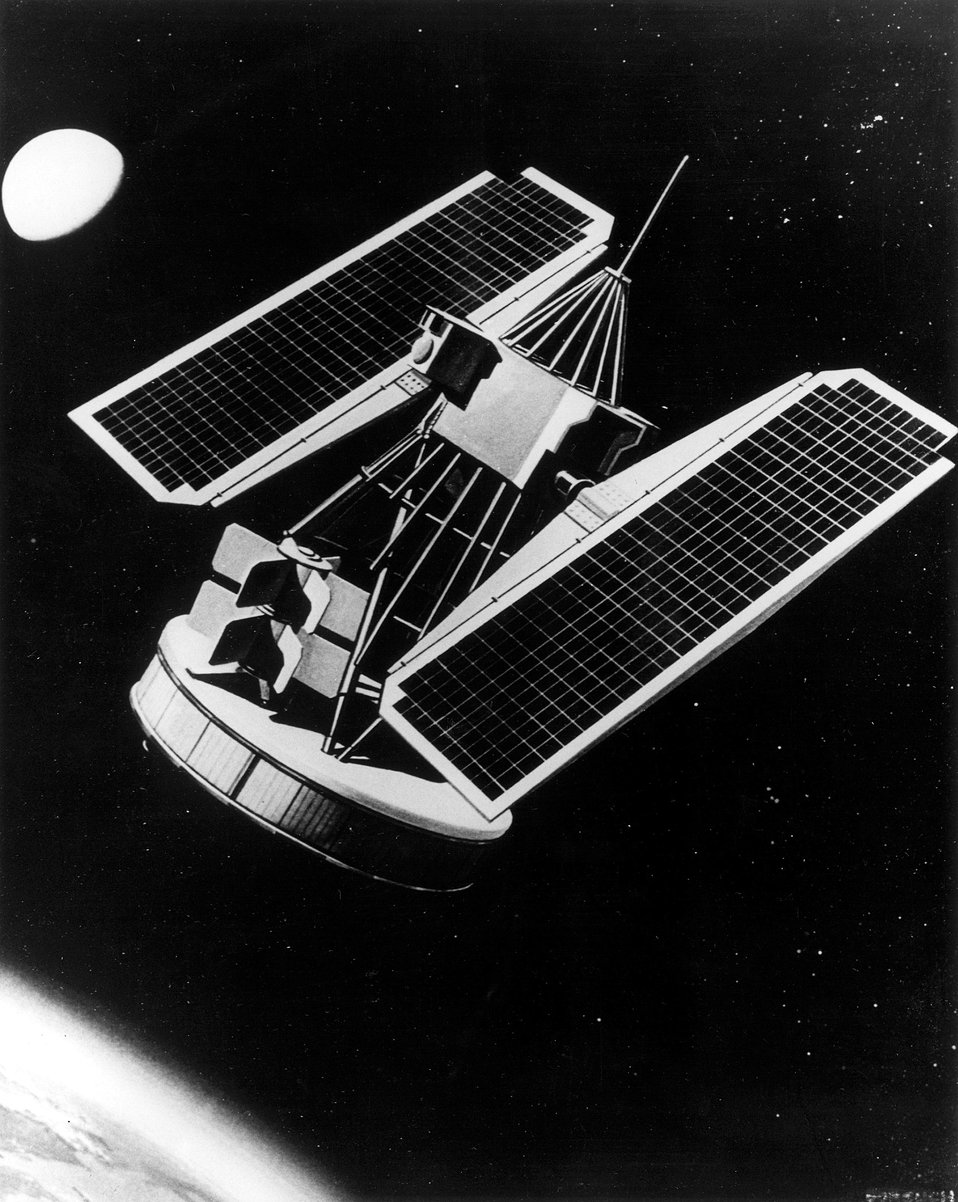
SNAP-19... When NASA puts an experimental Nimbus-B weather into orbit late in 1967, two SNAP-19 isotopic generators will be aboard to provide power for the instrumentation.